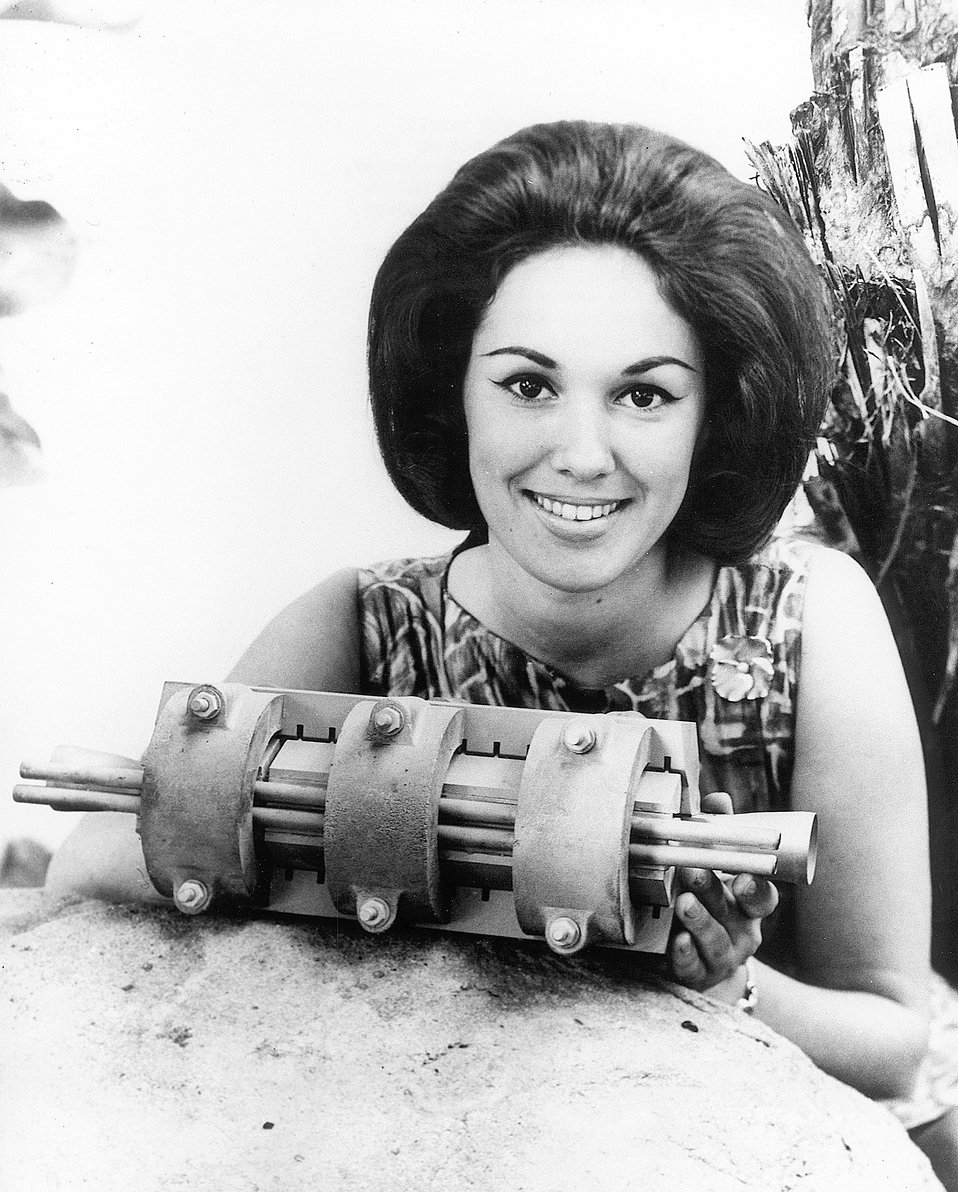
Development of a new metal thermoelectromagnetic pump, which has no moving parts and requires no power hookup to operate.